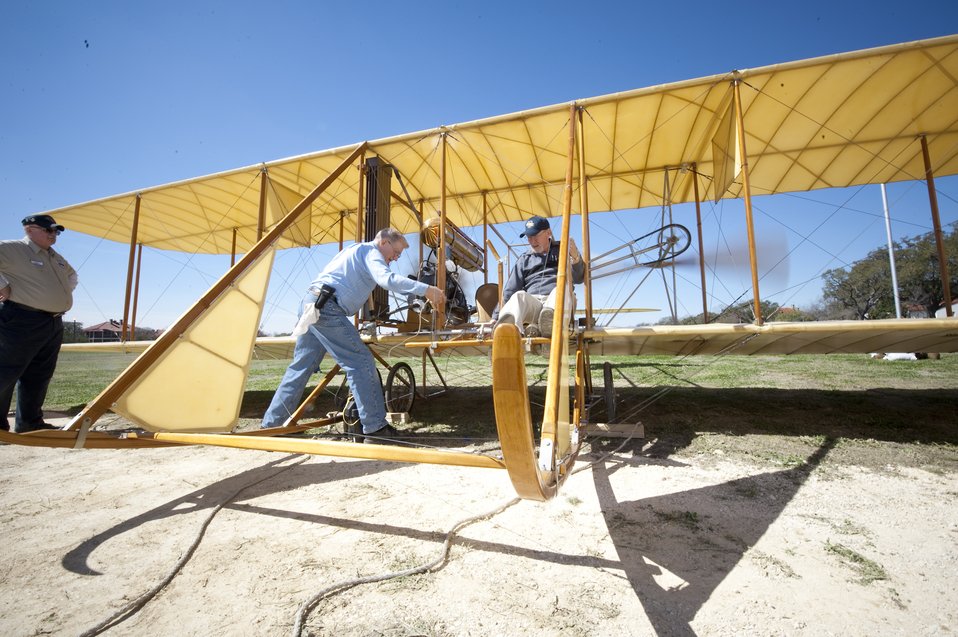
Wright